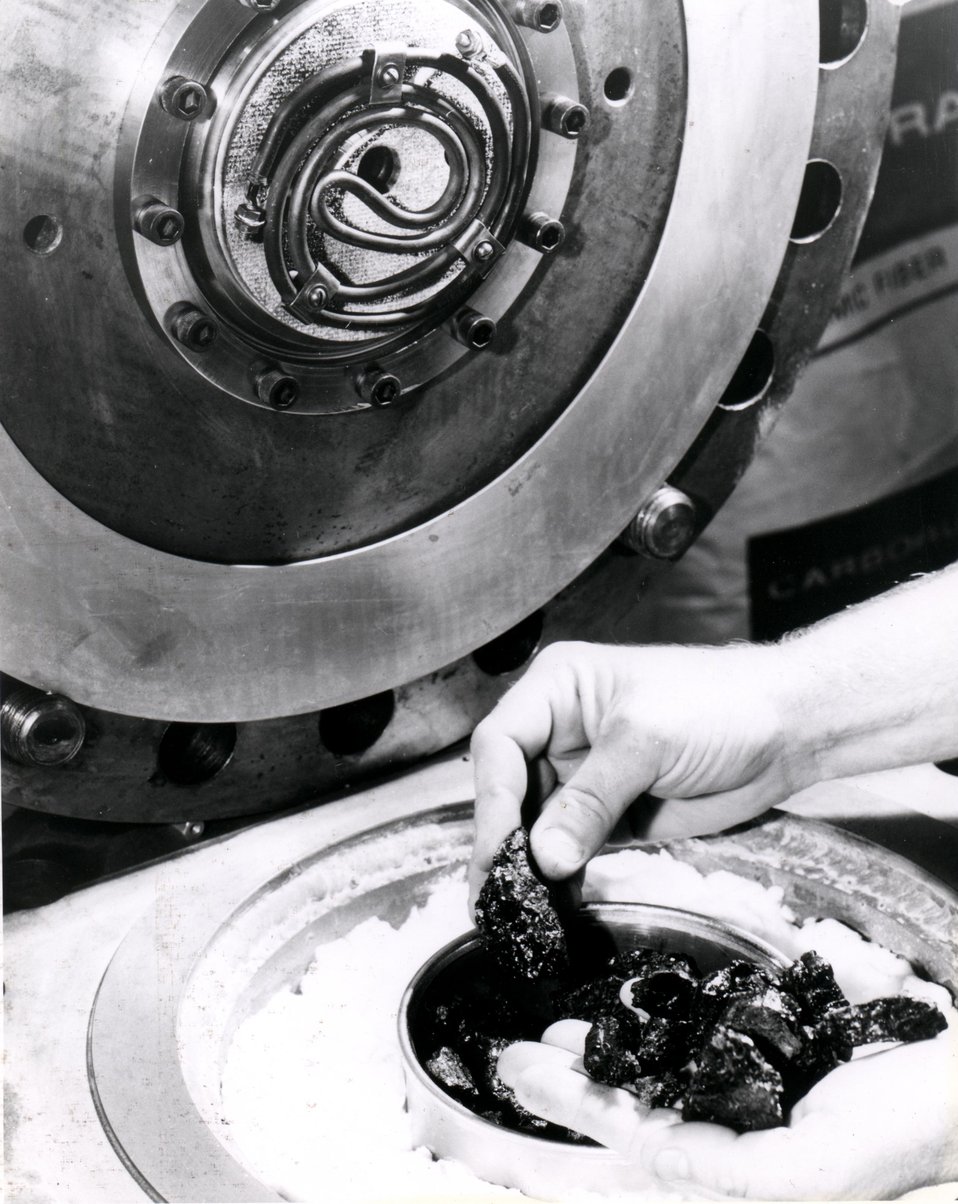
Scientists at the Energy Research and Development Administration's (ERDA) Lawrence Livermore Laboratory in California are using this pressure chamber in a laboratory study of the problems of developing a new technology to gasify coal deep underground without mining. Circa 1975.